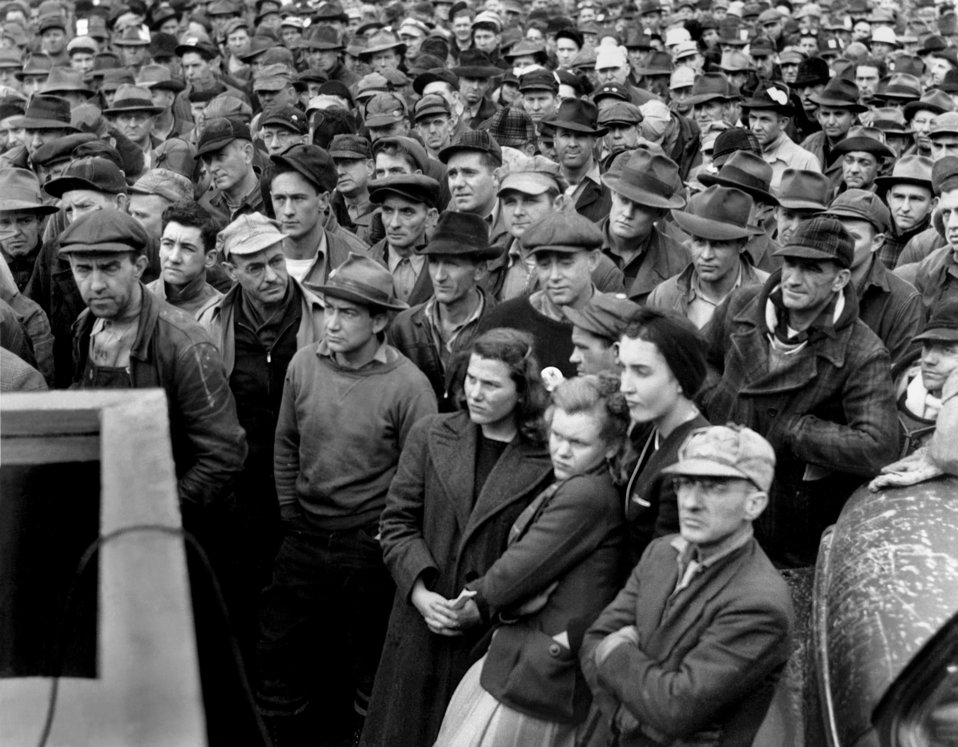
'Stay on the job' ralley at J.A. Jones Constrution Co. Oak Ridge

PRO199-10 DOE photo Ed Westcott

'Stay on the job' ralley at J.A. Jones Constrution Co. Oak Ridge Tennessee 12-14-1944